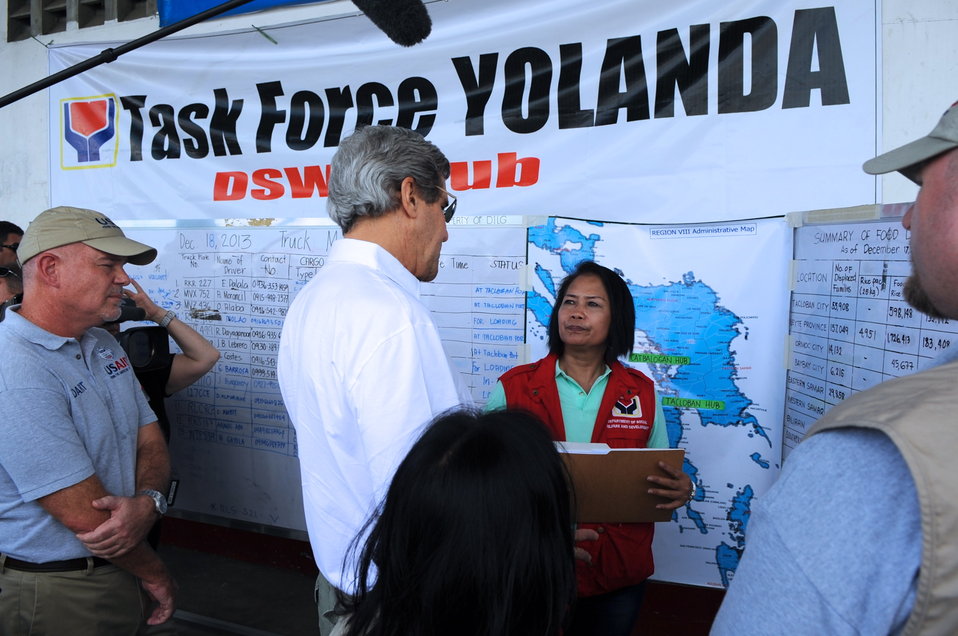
Secretary Kerry Receives a Typhoon Haiyan Recovery Briefing at the Welfare Distribution Center in Tacloban City

U.S. Secretary of State John Kerry receives a briefing on recovery efforts in the aftermath of Typhoon Haiyan as he visits the Welfare Distribution Center in Tacloban City, Philippines, on December 18, 2013.